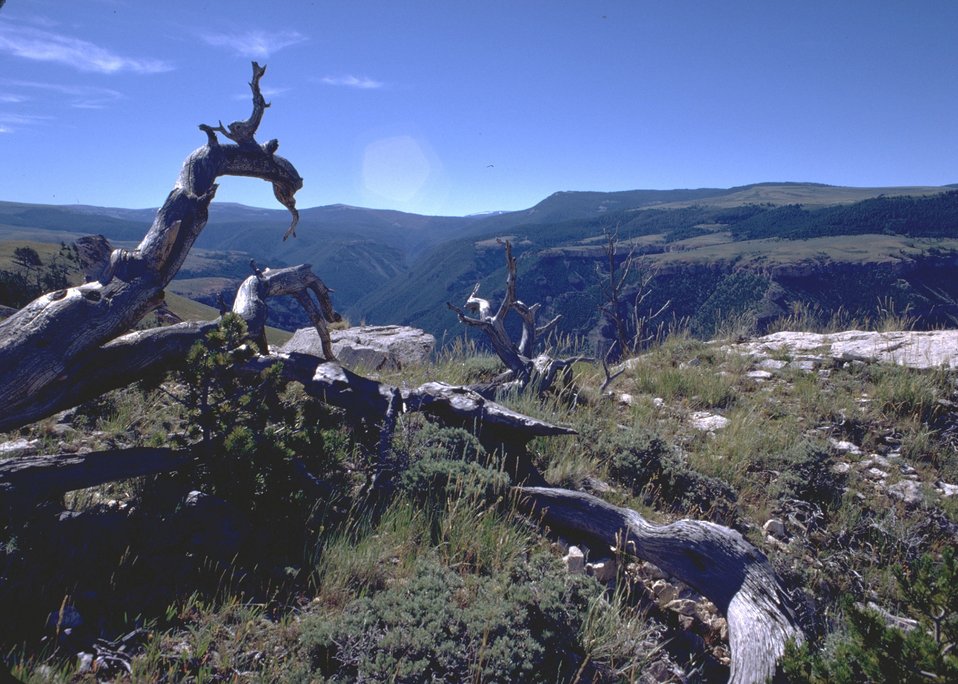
Scenic view of dried tree limbs along mountain edge.